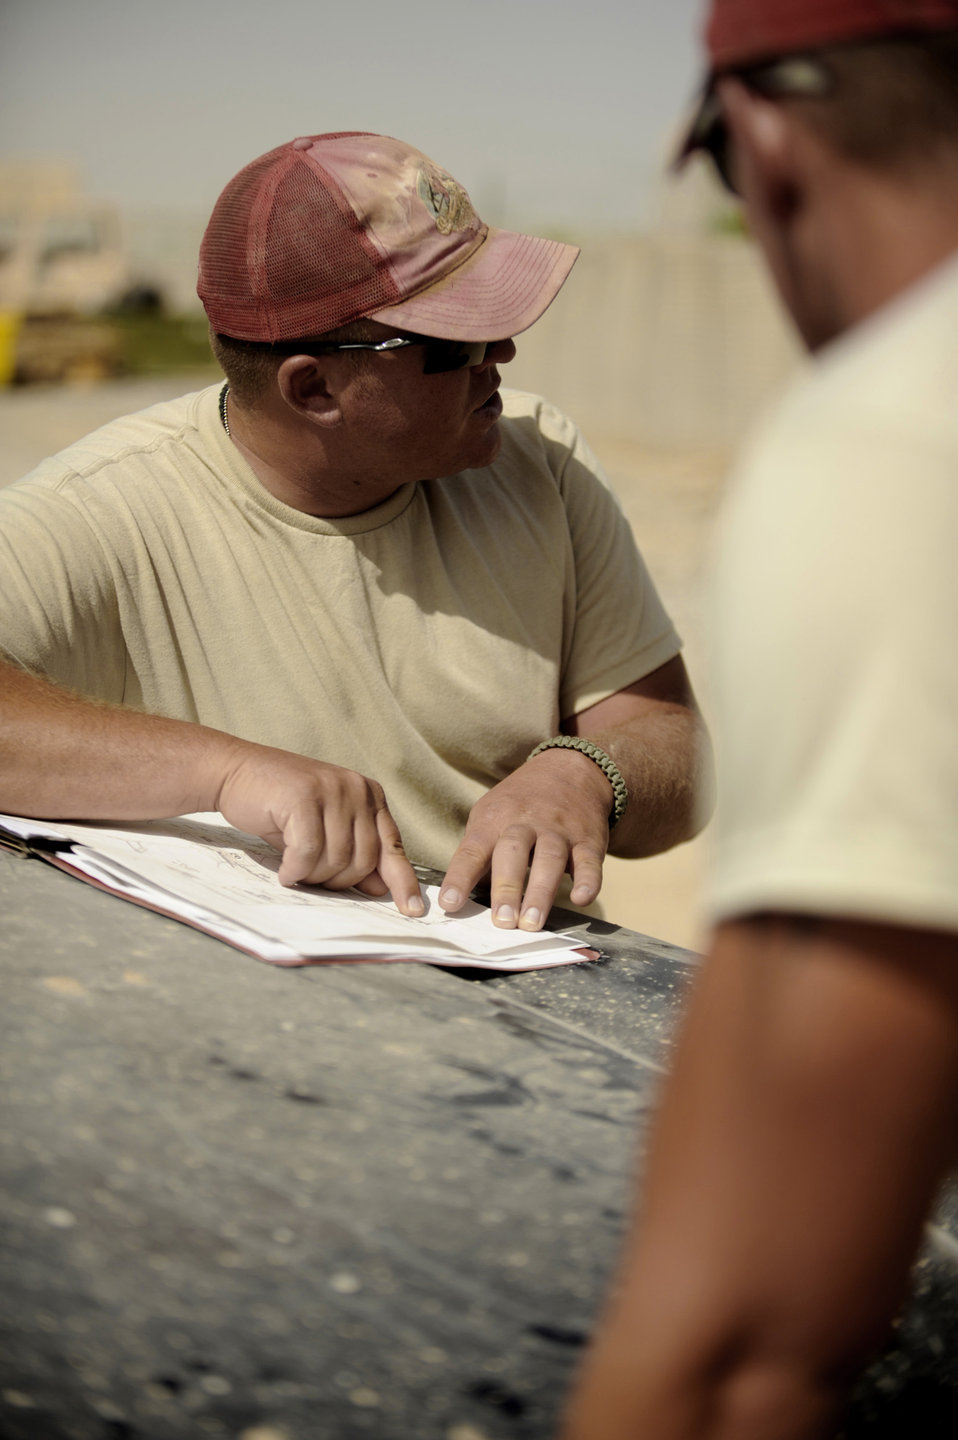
RED HORSE team serves as 'backbone' of Afghanistan construction

Tech. Sgt. Mike Stout reviews plans for an airfield expansion project May 7 at Kandahar Airfield, Afghanistan. RED HORSE members are assisting the 451st Air Expeditionary Group to accommodate the influx of aircraft required to support the surge in Afghanistan. Sergeant Stout is an 819th Expeditionary RED HORSE Squadron project manager.